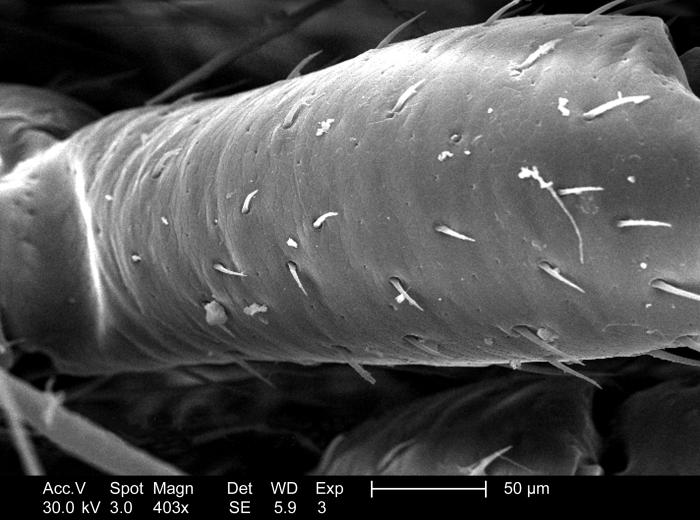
At a magnification of 403x, this 2005 scanning electron micrograph (SEM) provided a close-up view of the chitinous appendicular exoskeletal cuticle of an unidentified millipede found on the ground in the Decatur, Georgia suburbs. After having been secreted by the organism itself during its development, this firm cuticle, composed of a polysaccharide called chitin that is bound together with proteins, provides a very firm, inflexible, and protective exterior covering, much in the same way a suit of armor protects a soldier.